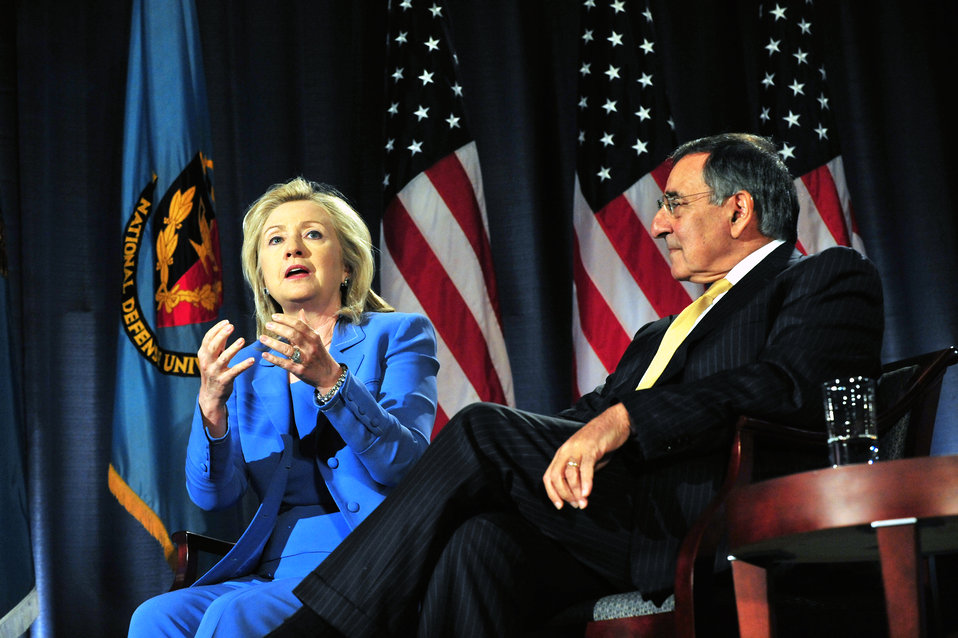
National Defense University Hosts a Conversation With Secretaries Clinton and Panetta

The National Defense University hosts a conversation with U.S. Secretary of State Hillary Rodham Clinton, left, and U.S. Secretary of Defense Leon Panetta, right, moderated by Frank Sesno, Director of the School of Media and Public Affairs at George Washington University, at NDU in Washington, D.C., on August 16, 2011.